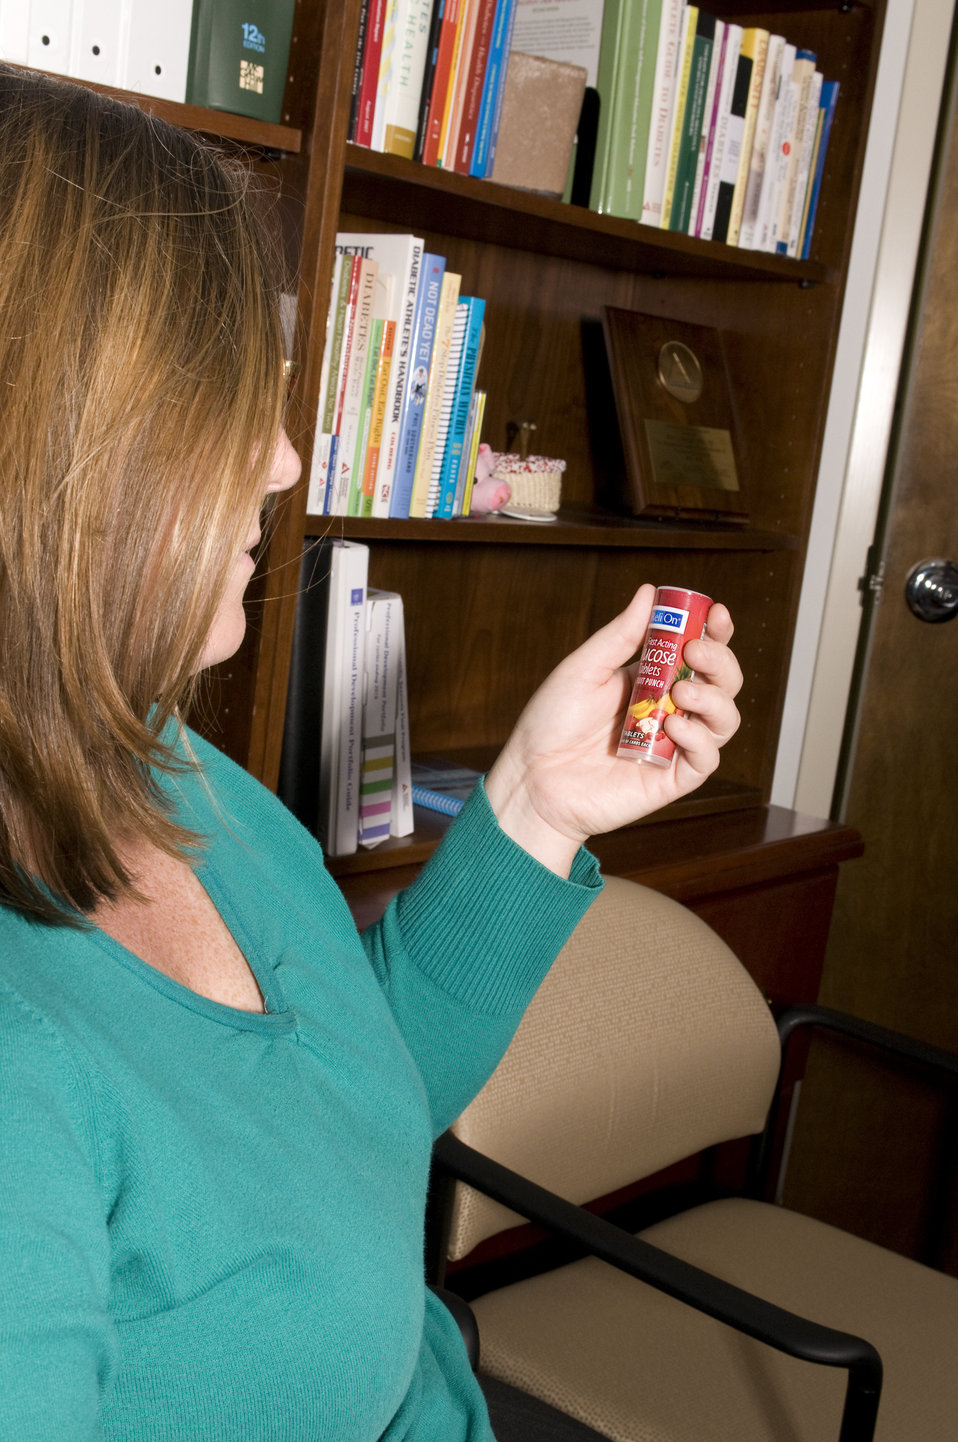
This image depicts a female diabetic patient reading the label on a bottle containing glucose tablets, which she could take in case her blood glucose concentration dropped to an unsafe level.